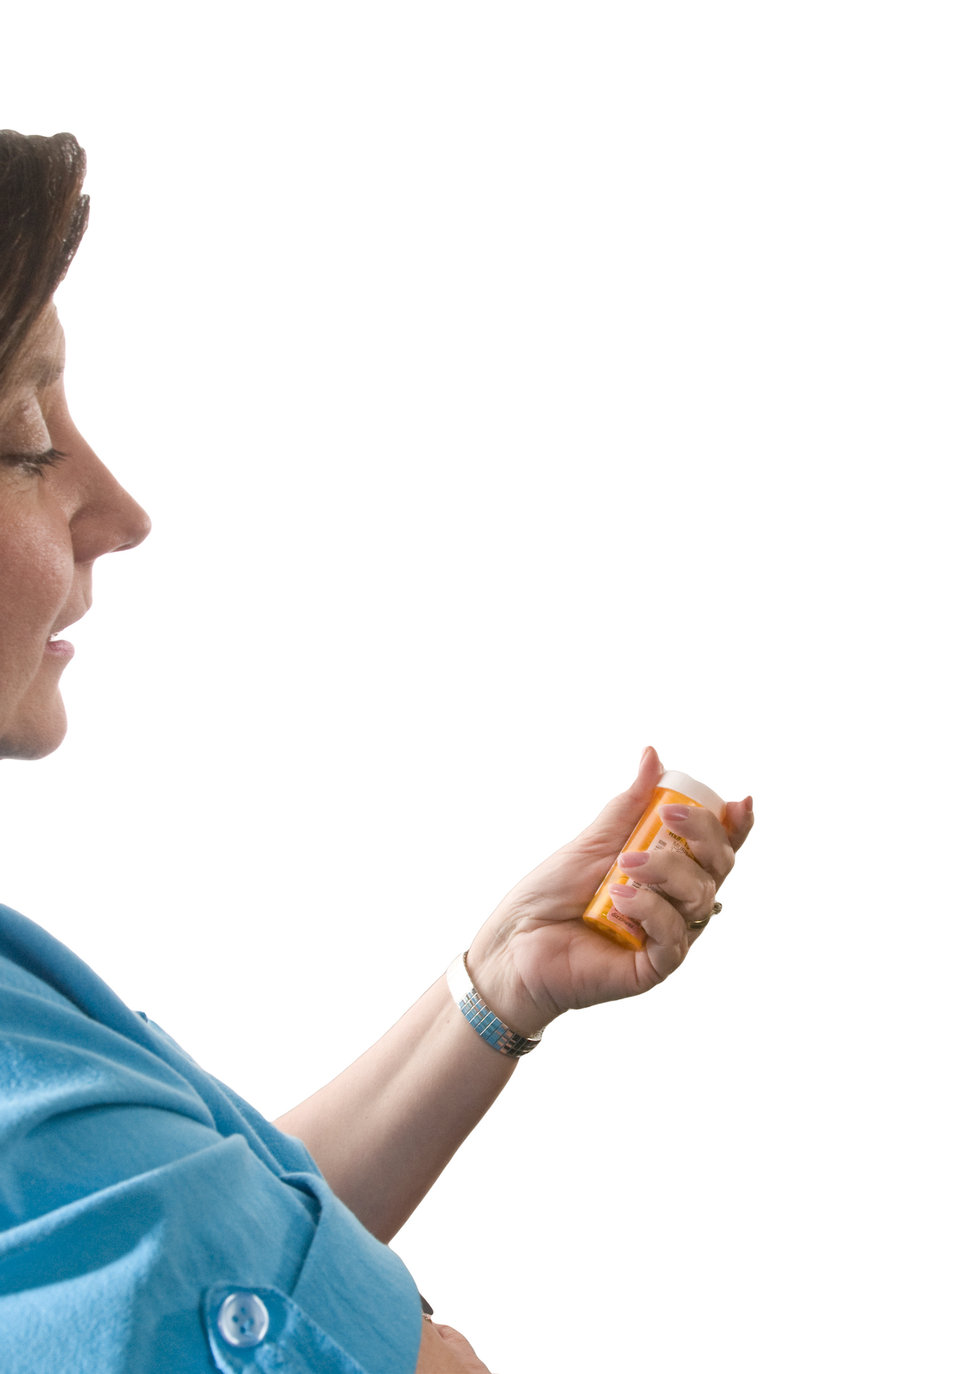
In her left hand, this woman was holding an amber prescription bottle containing an unknown medication. She was reading the directions printed on the bottle's label, after having been prescribed this medication by her healthcare provider.